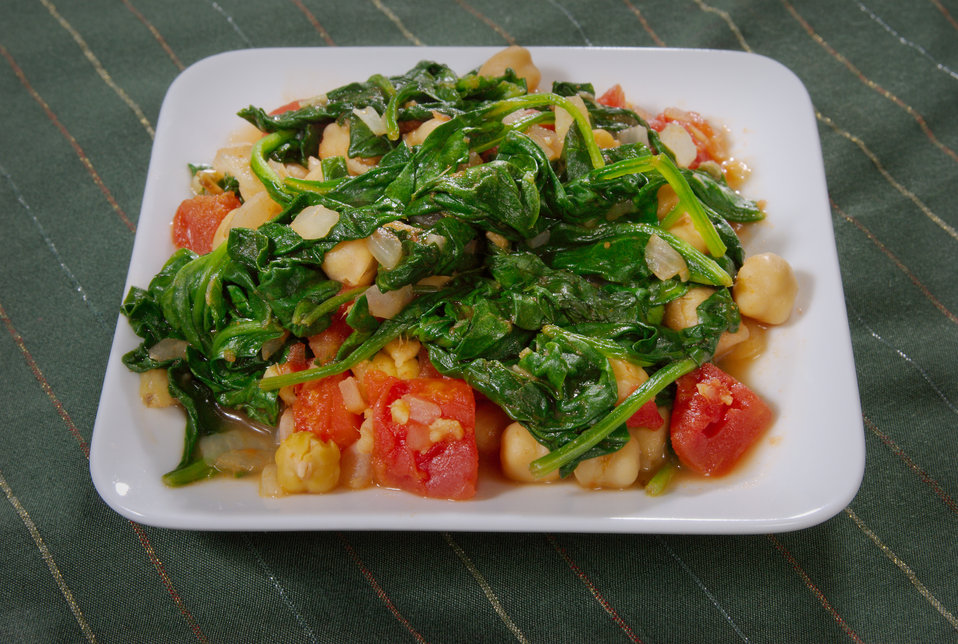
Here's a nutrient-rich meal called Chickpea and Spinach Curry, containing high levels of vitamin A and C, 6 grams of dietary fiber, 7 grams of protein, and no saturated fats. It would make a terrific choice as a meal, or a side dish over foods that are calorie-dense, higher in saturated fats and sodium. The recipe calls for spinach, tomatoes, chickpeas, and onion, and is seasoned with curry powder, ginger, olive oil, and a touch of salt.